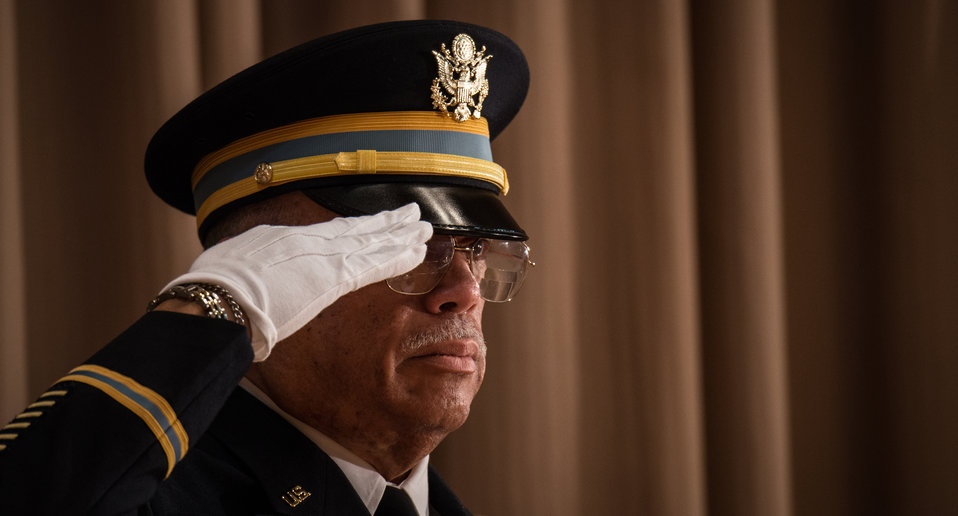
U.S. Department of Agriculture (USDA) Farm Services Agency (FSA) Office of Civil Rights U.S. Army Captain (retired) and Vietnam veteran Andrew Malloy conducts the Prisoner of War (POW)/Missing in Action (MIA) Honors Ceremony, during the 2013 U.S. Department of Agriculture (USDA) Veterans’ Day Observance, whose theme is “VALOR, COURAGE, SACRIFICE – HONORING ALL WHO SERVED,” in Washington, DC, on Wednesday, November 20, 2013.